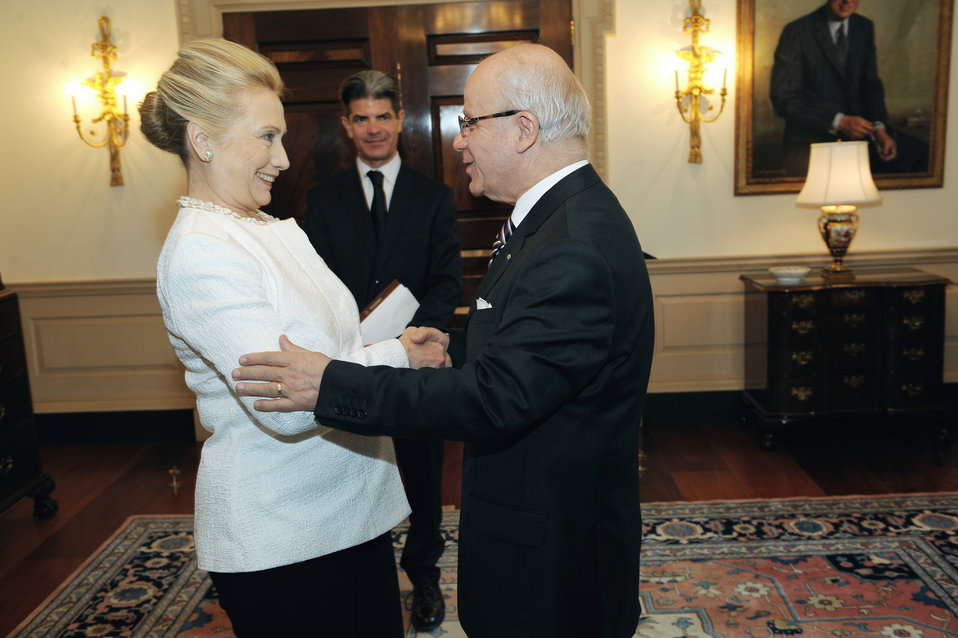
Secretary Clinton Shakes Hands With Algerian Foreign Minister Medelci

U.S. Secretary of State Hillary Rodham Clinton shakes hands with Algerian Foreign Minister Mourad Medelci before their bilateral meeting at the U.S. Department of State in Washington, D.C., on January 12, 2012.